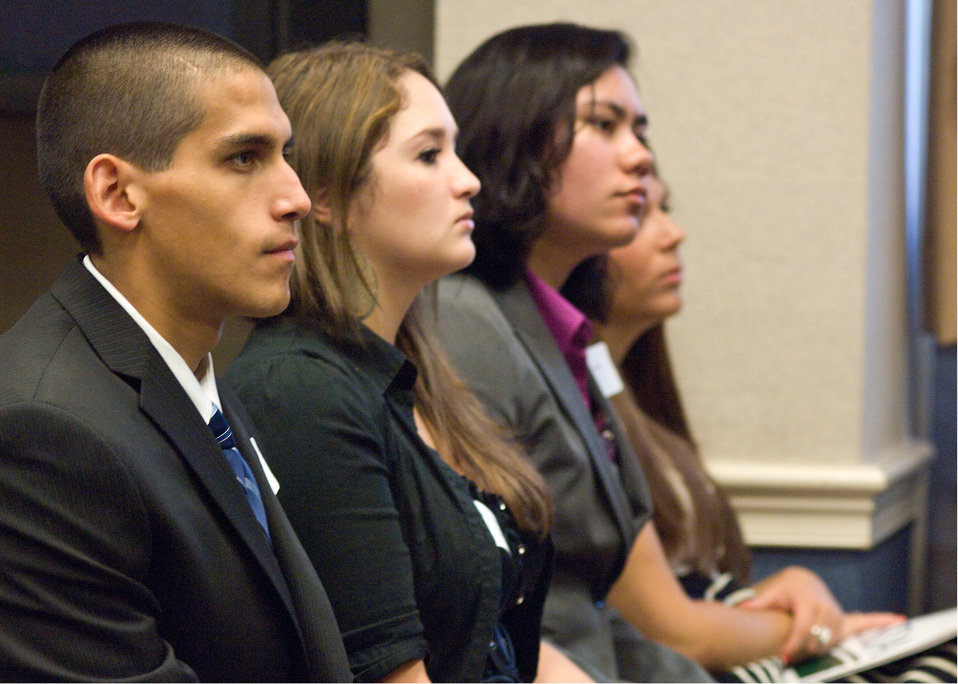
College students from USDA HACU and 1994 Tribal Colleges listen to speakers during the USDA HACU and 1994 Tribal College Summer Internship Orientation Program at the Department of Agriculture in Washington, DC, Monday, June 7, 2010. USDA Photo 10di1390-27.